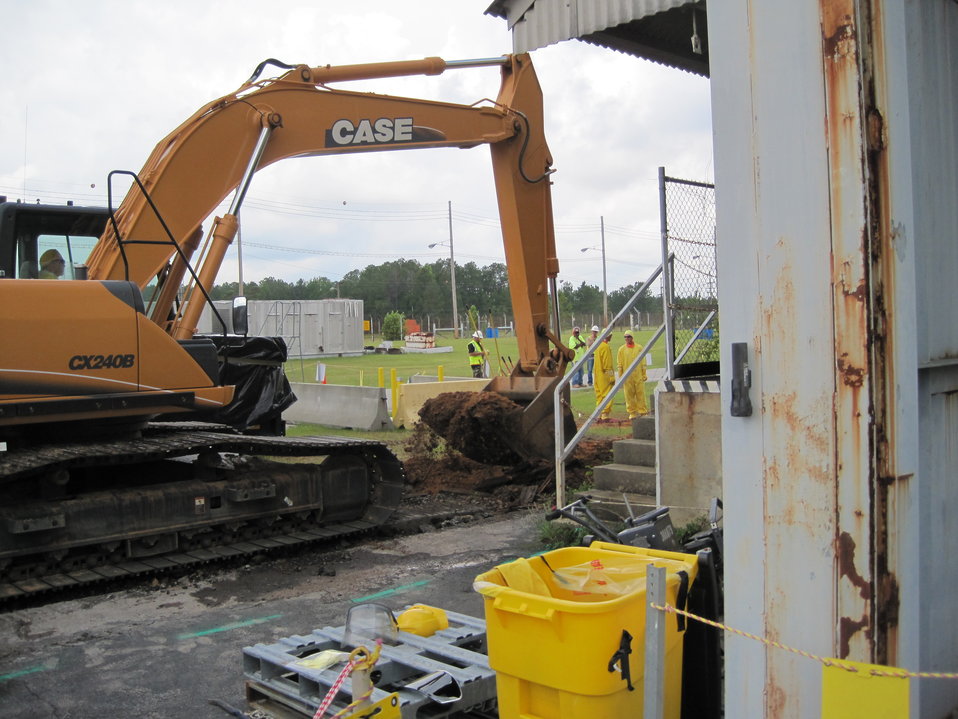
Workers Clean Up C Area as Added Value from Recovery Act P and R Reactor Projects

Remediation activities are under way at Savannah River Site’s C Area. The C Reactor operated until 1985.